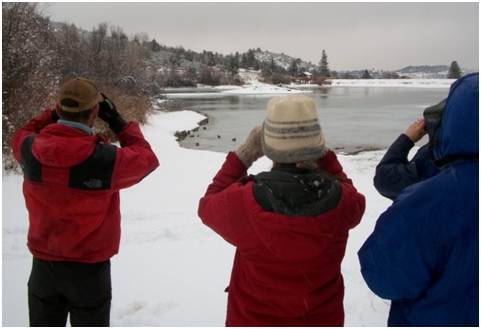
Winter Waterfowl

Dave Johnson (left) from the Yreka FWO helps a member of the public identify wintering waterfowl during a Fish and Wildlife Service led waterfowl walk at the Greenhorn Reservoir in Yreka, CA